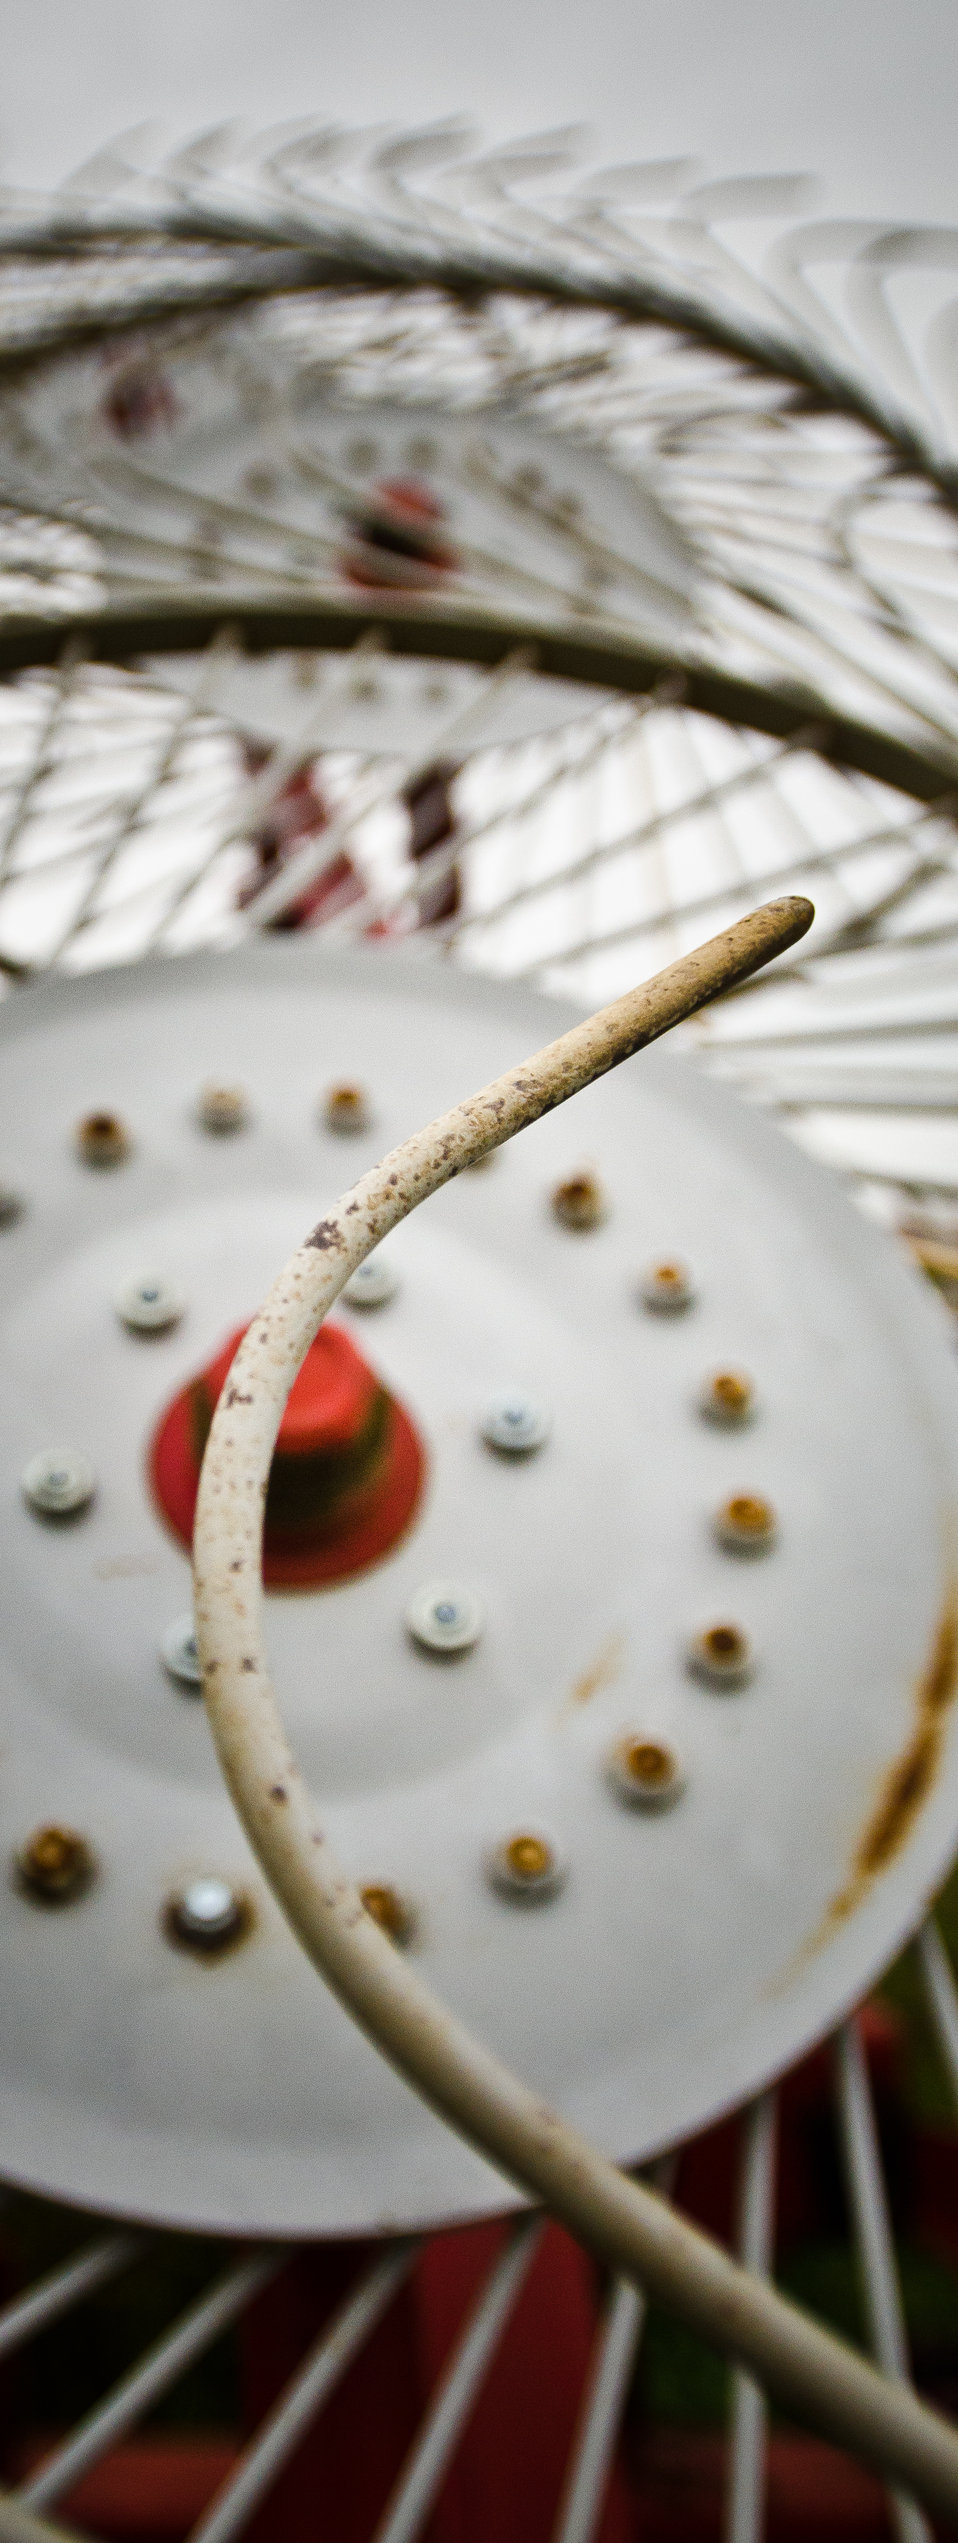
Farm equipment at Nick’s Organic Farm, owned by Nick Maravell in Adamstown, MD on Friday, July 12, 2013. The farm produces Black Angus beef, chicken, turkey, eggs, hay, soybeans, corn, alfalfa, orchard grass, rye; and other crops. The cattle are 100% grass-fed receiving certified organic pasture, certified organic hay (in winter), water and mineral salts mixed with sea kelp. The cattle are not fed hormones, antibiotics or animal products. Poultry feed from grain is ground from organic grain. The poultry also graze on organic pastures. The farm has conducted on-farm research with federal, state and non-profit agencies to refine organic practices. An organization such as the U.S. Department of Agriculture (USDA) Agricultural Research Service (ARS) center in Beltsville has been able to conduct research to improve organic crops and to breed and manage the cattle so that they have. George Kloph is the farm assistant at this site.